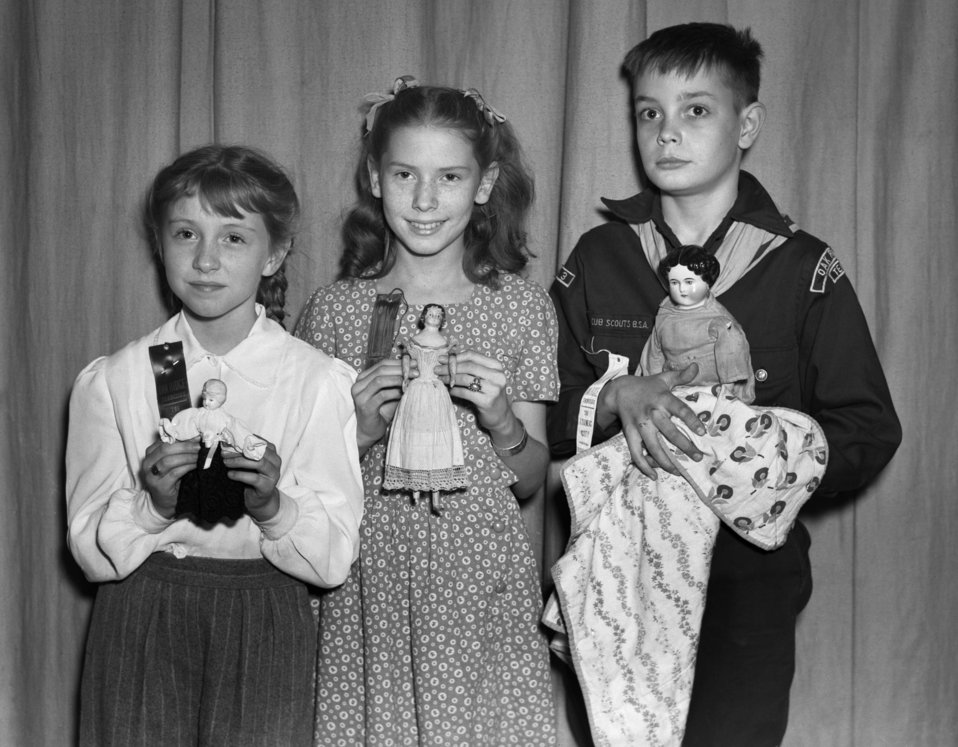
Doll Show Glennwood School Oak Ridge 1947

3275-8cpc DOE photo Ed Westcott Oak Ridge Tennessee